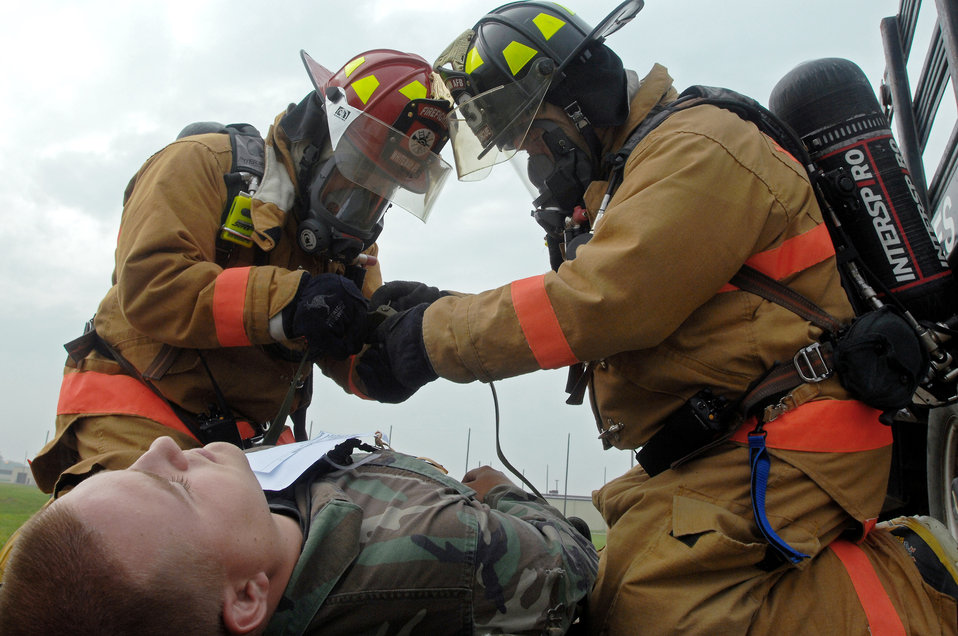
Preparing for a disaster

Firefighters Tech. Sgt. Ben Hosbein (left) and Gregory Smith prepare Airman 1st Class Richard May to be transported to a medical tent after he suffered simulated wounds from